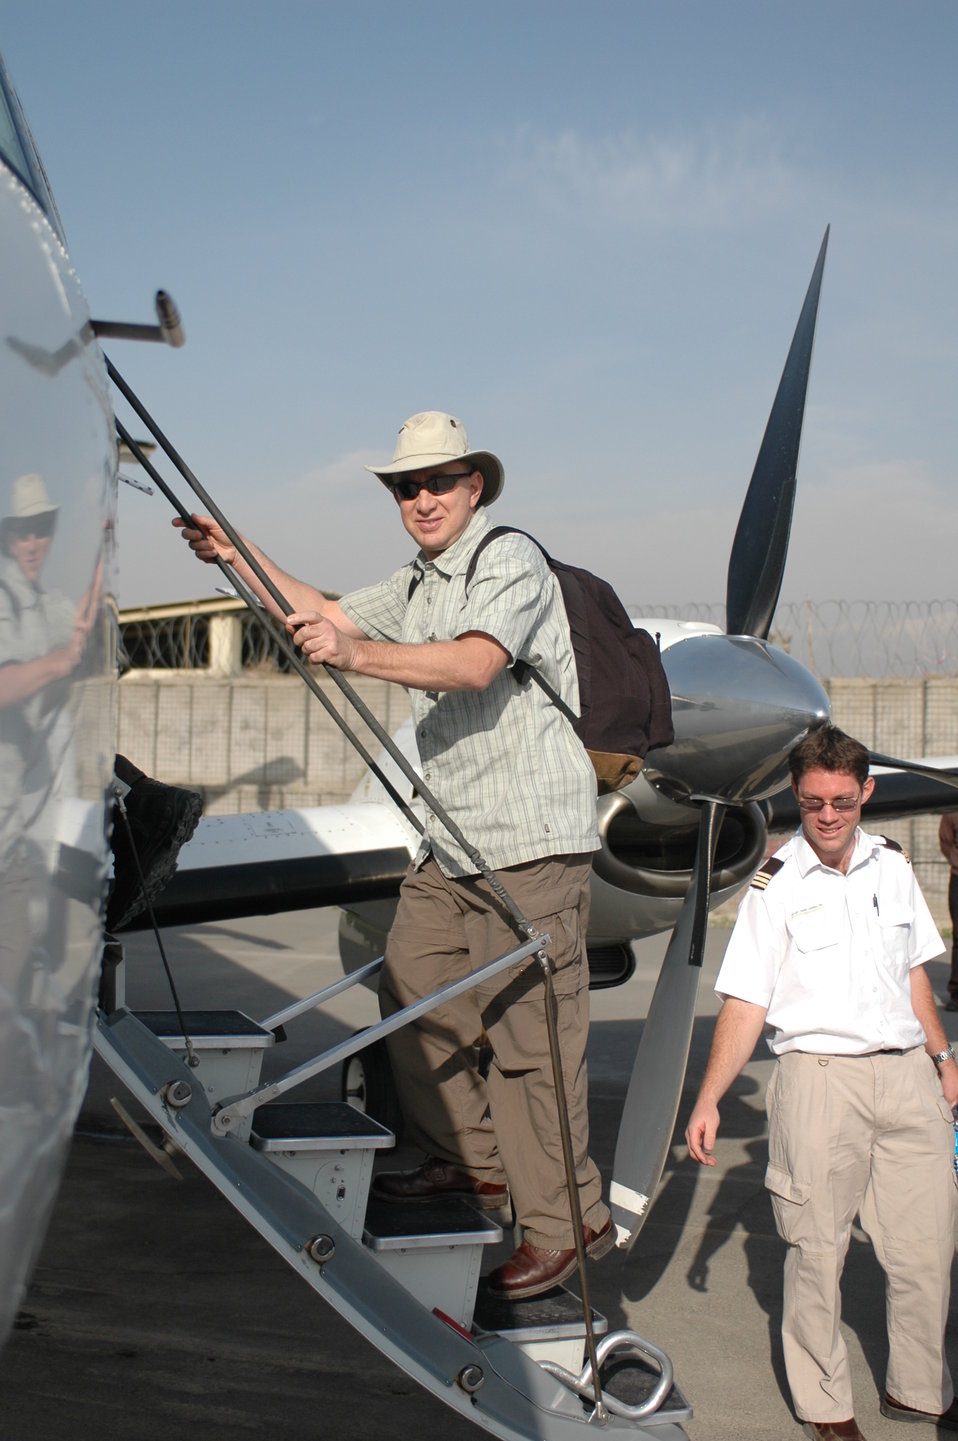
Dr Shah Visits Kandahar April 9, 2010